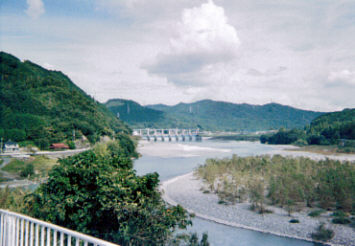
Dam